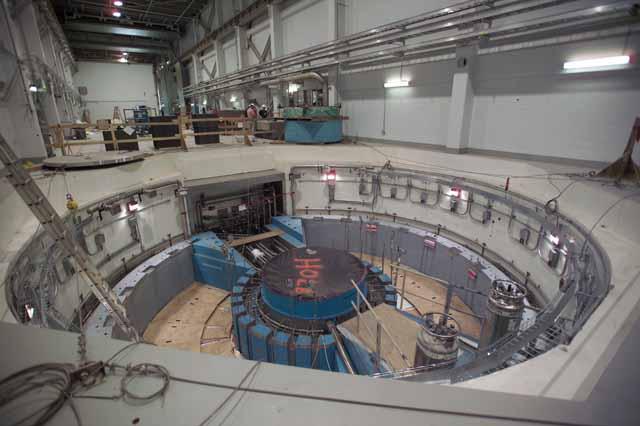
CONSTRUCTION IN THE INTERIOR OF THE SPALLATION NEUTRON SOURCE.

THE SPALLATION NEUTRON SOURCE (SNS) IS AN ACCELERATOR BASED NEUTRON SOURCE BEING BUILT IN OAK RIDGE, TENNESSEE BY A PARTNERSHIP OF SIX DEPARTMENT OF ENERGY LABORATORIES. SCHEDULED FOR COMPLETION IN 2006, THE SNS WILL PROVIDE THE MOST INTENSE PULSED POWER NEUTRON BEAMS IN THE WORLD FOR SCIENTIFIC RESEARCH AND INDUSTRIAL DEVELOPMENT.